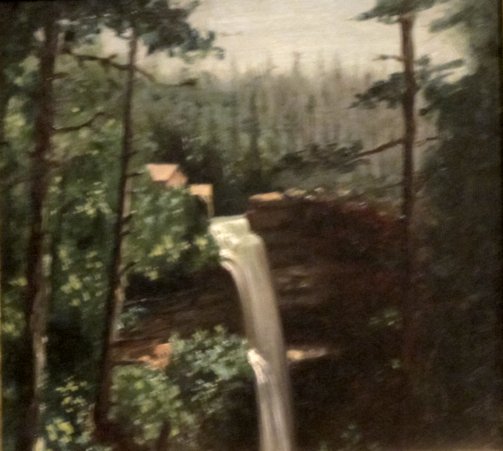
'Waterfall' by Edward Edmondson, Jr., Dayton Art Institute